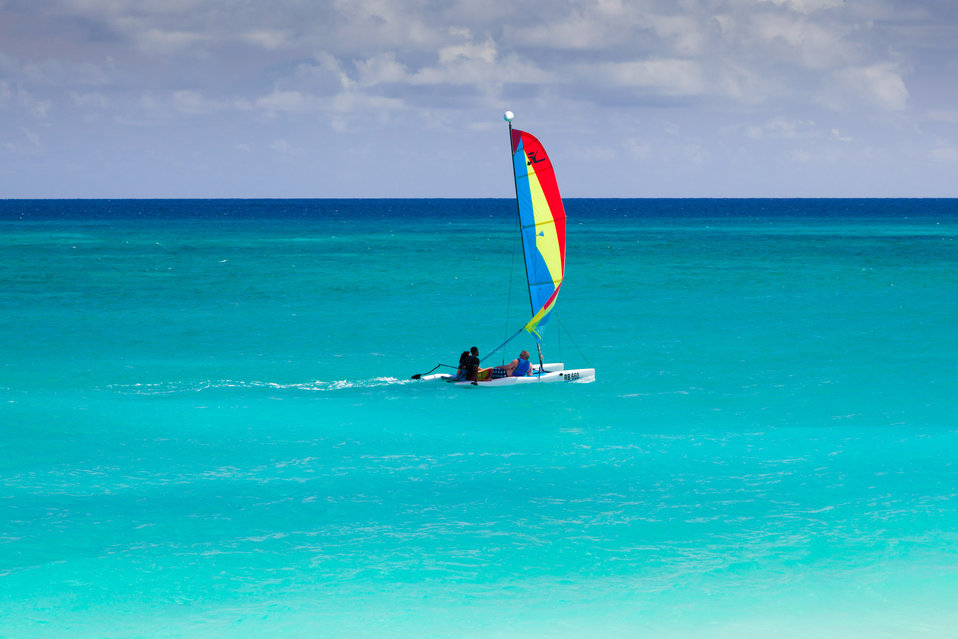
Catamaran sailing in caribbean sea.